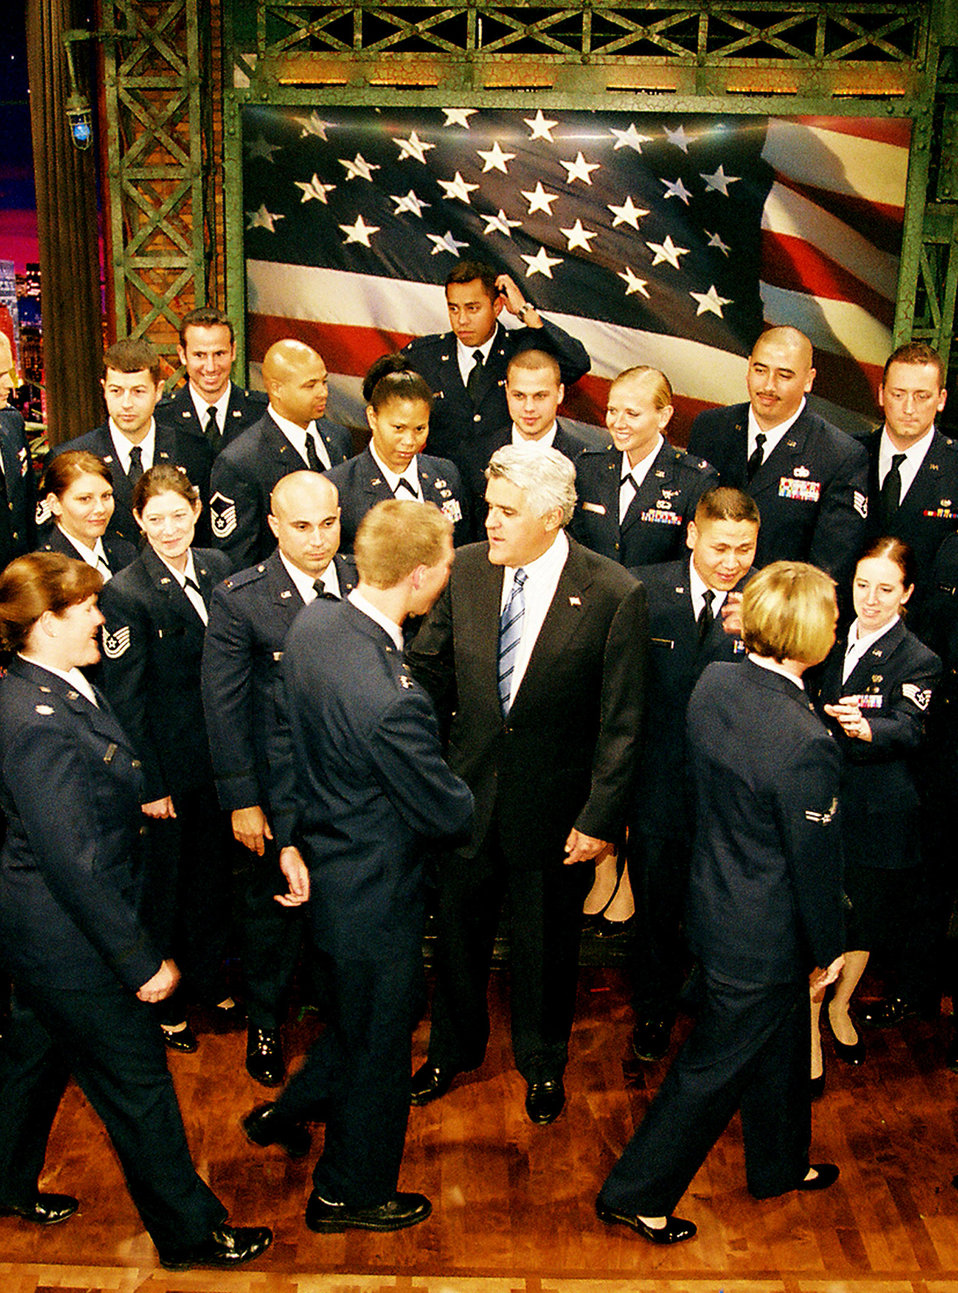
Jay Leno

Vandenberg Airmen introduce themselves to Jay Leno before posing for a picture on the set of